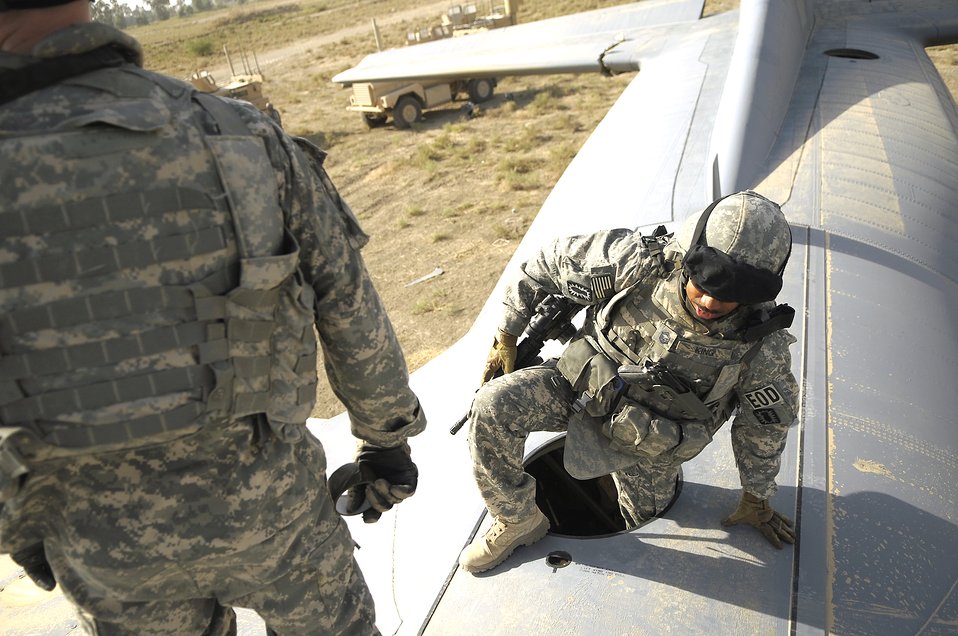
Iraqi Freedom

Senior Master Sgt. Pervis King from the 447th Air Expeditionary Group's explosive ordnance disposal team climbs through the top hatch of a C-130 Hercules aircraft before placing explosive charges around the wings of the plane July 7 in Baghdad, Iraq. The team is using a series of controlled detonations designed to divide the airplane into smaller pieces so it can be moved. The C-130 made an emergency landing in a field north of the Baghdad International Airport shortly after take-off on June 27.